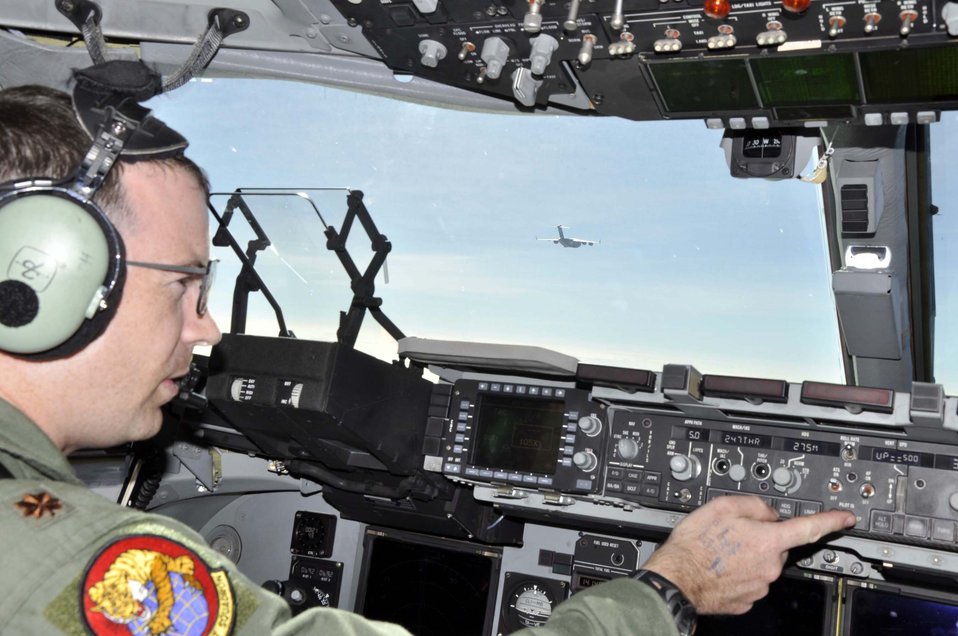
Airmen arrive in Thailand for Cope Tiger 2010

Maj. Sean Papworth maneuvers a C-17 Globemaster III into position off the right wing of another C-17 shortly after takeoff Feb. 25, 2010, from Joint Base Pearl Harbor Hickam, Hawaii. Both aircraft flew in a two-ship formation from Hawaii to Thailand. Major Papworth is from the 535th Airlift Squadron at JB Hickam.